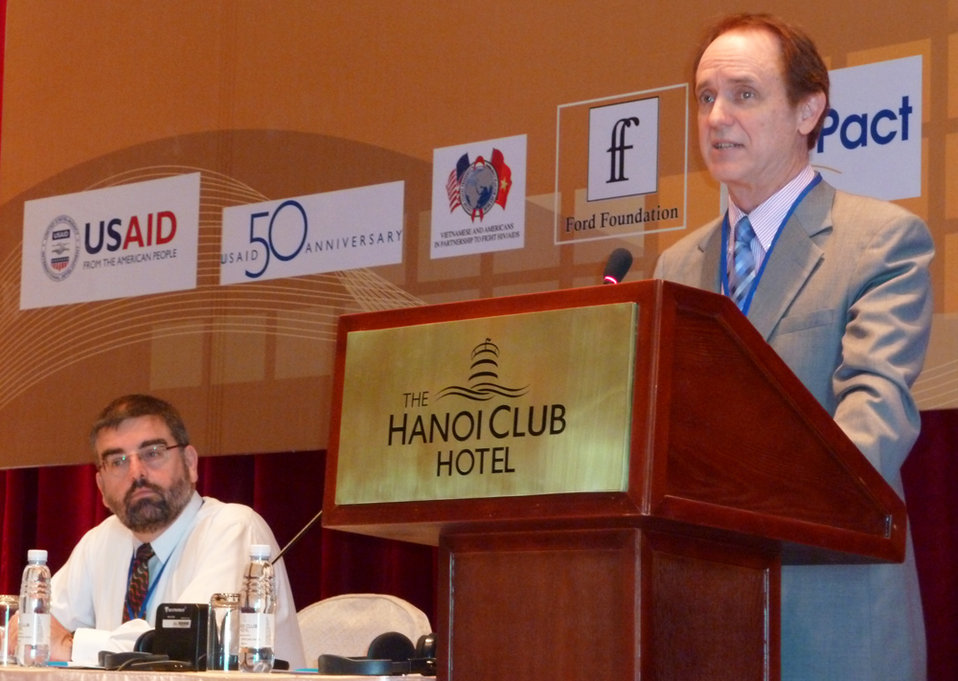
USAID Mission Director Francis Donovan addresses a conference on gender and HIV in Hanoi.

Gender and HIV conference: May 11, 2011